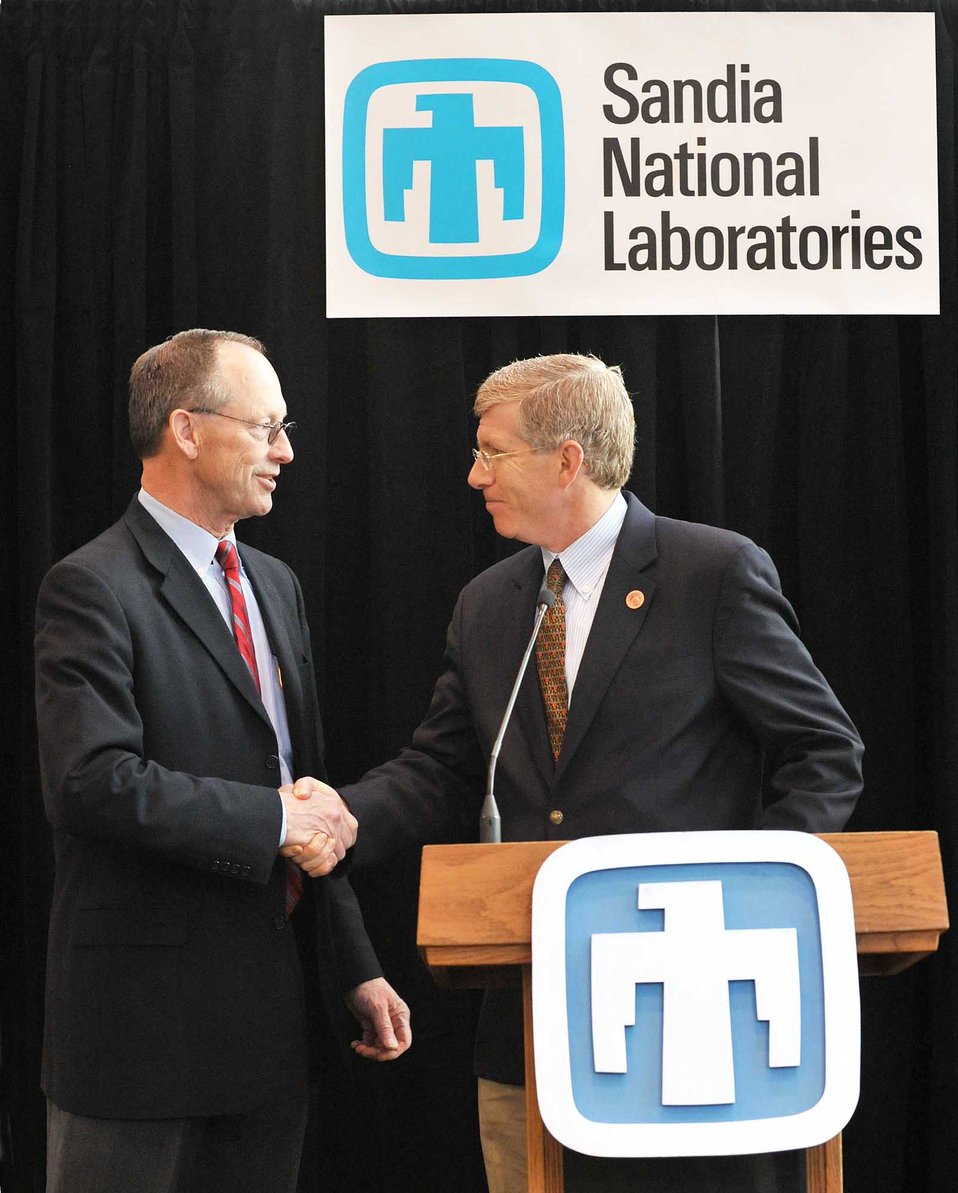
Deputy Secretary Poneman speaks to employees at Sandia National Laboratories